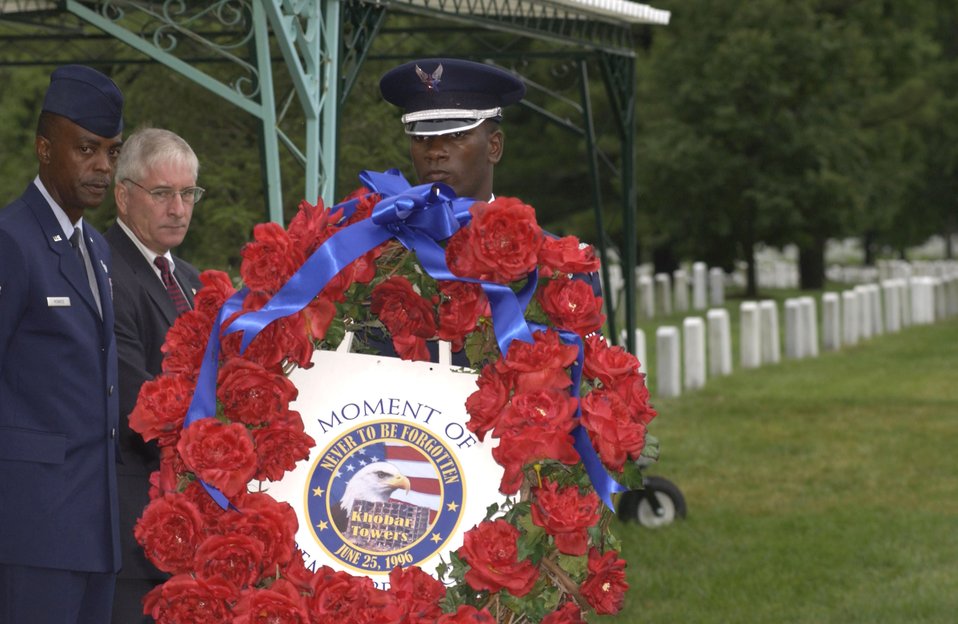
Khobar Towers 10th Anniversary

U.S. Air Force Honor Guard member Senior Airman Jarvis Warthen carries the ceremonial wreath to be placed at the headstones of Master Sgt. Michael George Heiser and Airman 1st Class Brian McVeigh during the remembrance ceremony of the Khobar Towers bombing on Sunday, June 25, at Arlington National Cemetery, Va. Family members and friends of the 19 Airmen killed in the terrorist bombing at Dhahran Air Base, Saudi Arabia, on June 25, 1996, gathered for the ceremony.